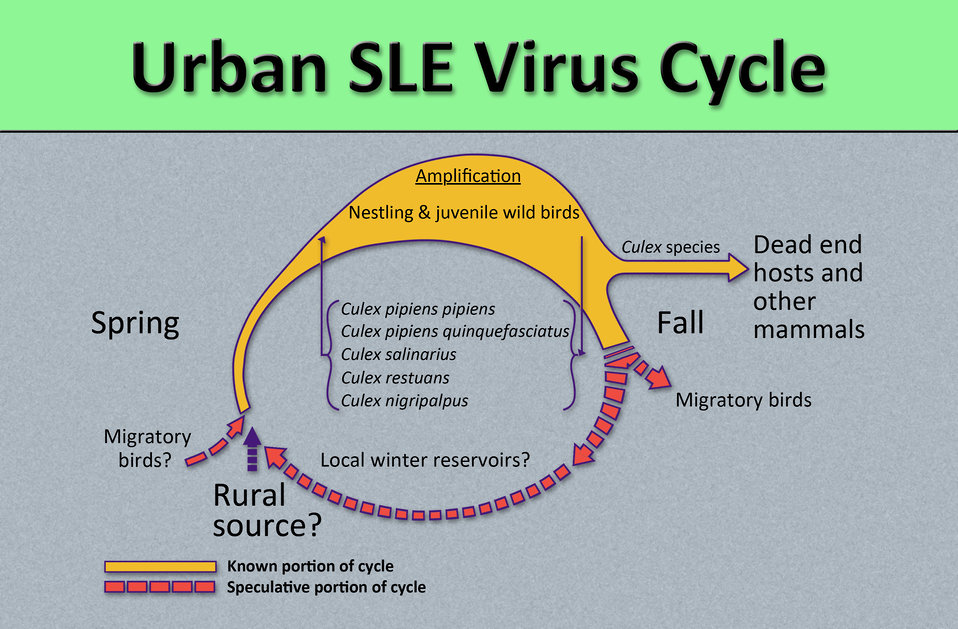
This diagram illustrates the methods by which the arbovirus, St. Louis encephalitis virus (SLEV) reproduces and amplifies itself in urban avian populations, and is subsequently transmitted to dead end hosts including humans and other mammals by a number of Culex spp. mosquitoes.